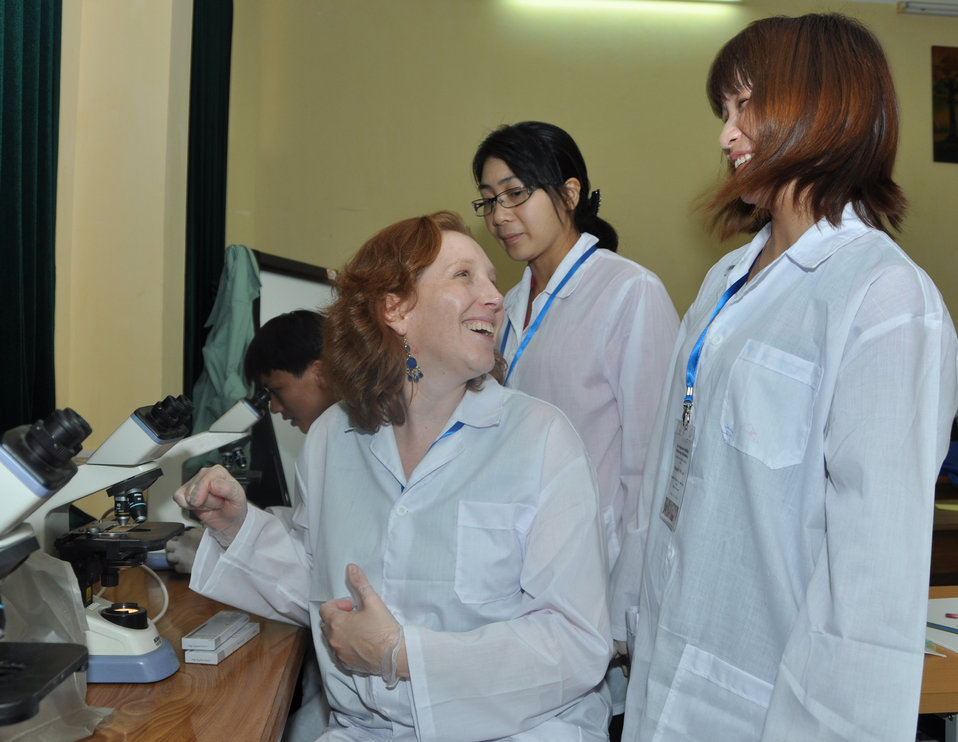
USAID USAID EPT Smithsonian Pathology Training to Detect Emerging Infectious Diseases Wildlife and Other Animals in Vietnam WorkshopSmithsonian Pathology Training to Detect Emerging Infectious Diseases Wildlife and Other Animals in Vietnam Workshop